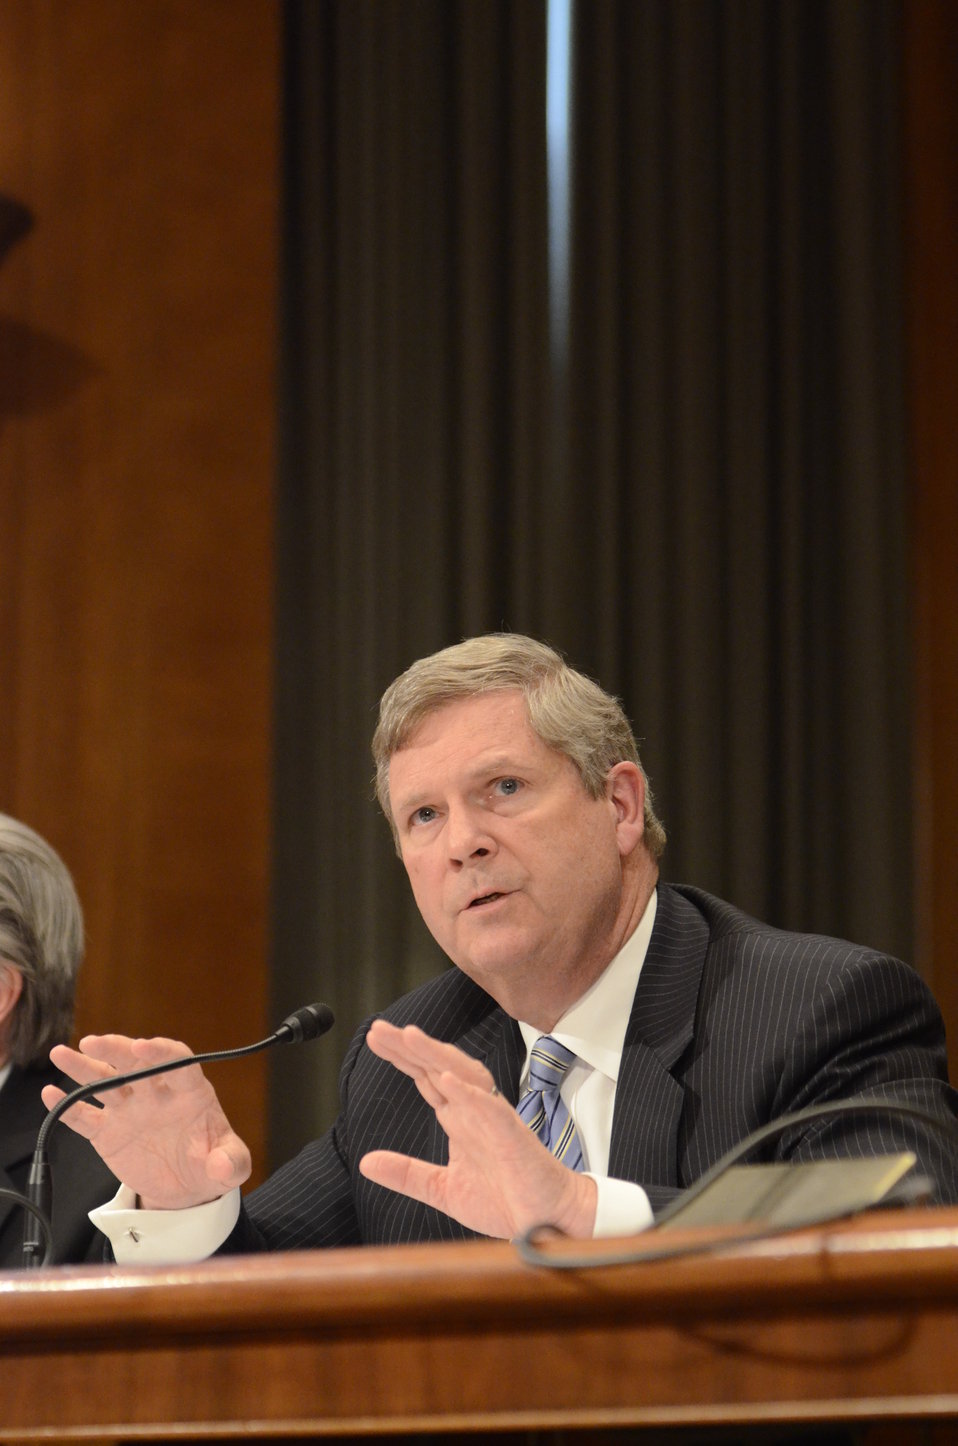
Agriculture Secretary Tom Vilsack testifies before the Senate Agriculture Appropriations Committee on the fiscal year 2013 budget at the Dirksen Senate Office Building in Washington, D.C., on Thursday, March 29, 2012.